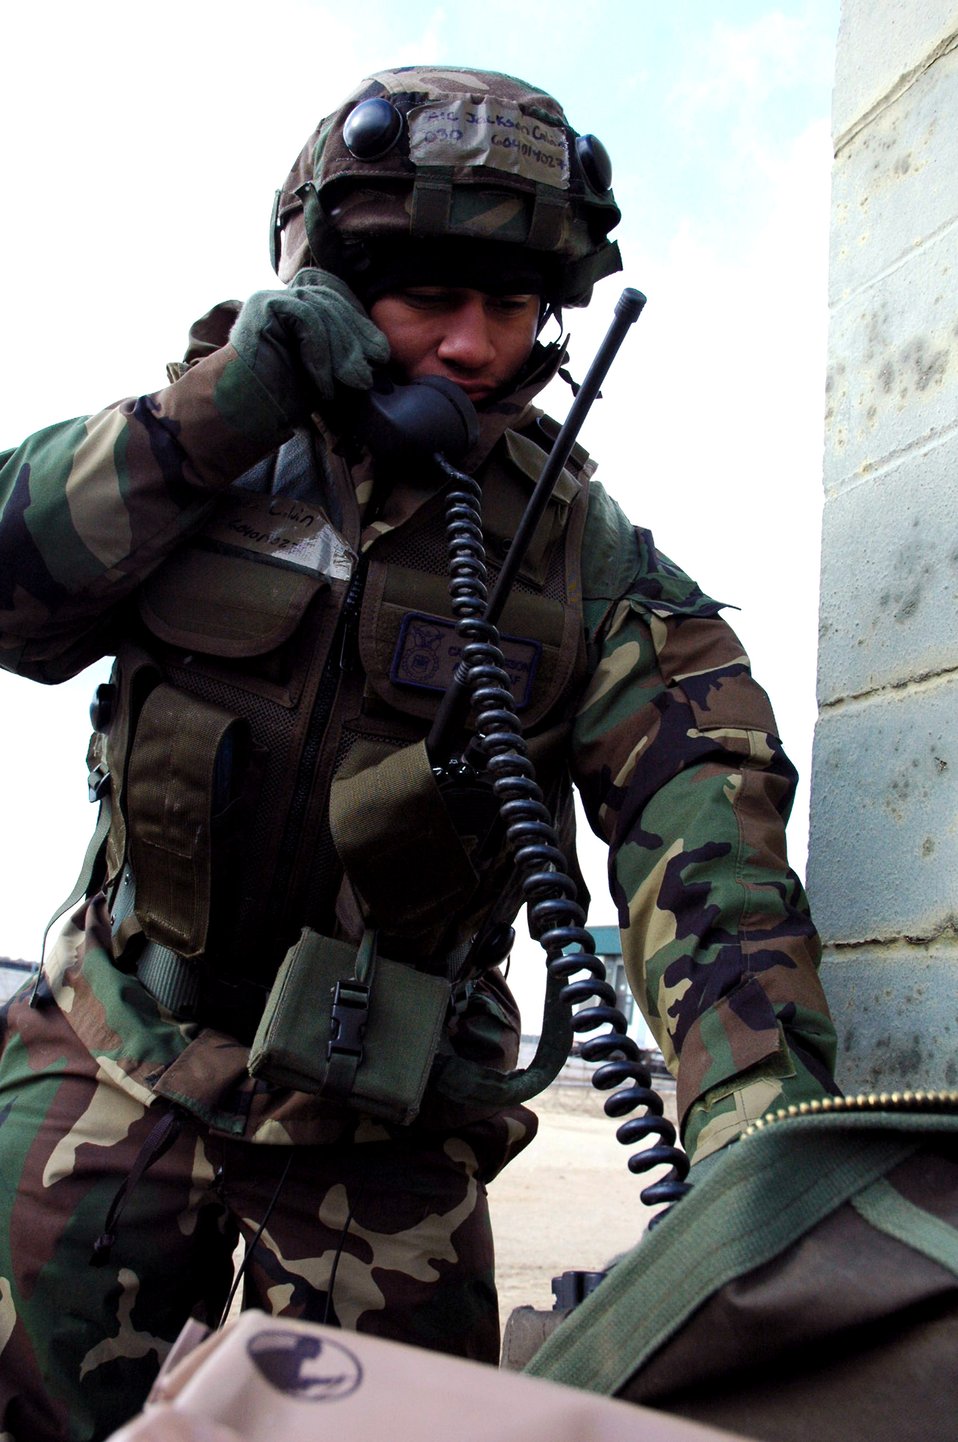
Warrior school

Airman 1st Class Jackson Calvin calls on a field phone during operations for Exercise Eagle Flag 08-2 Jan. 20 at Naval Air Engineering Station Lakehurst, N.J. Airman Calvin is a security forces Airman from the 60th Security Forces Squadron from Travis Air Force Base, Calif. The exercise is operated by members of the Air Force Expeditionary Center's Expeditionary Operations School and 421st Combat Training Squadron at Fort Dix, N.J.